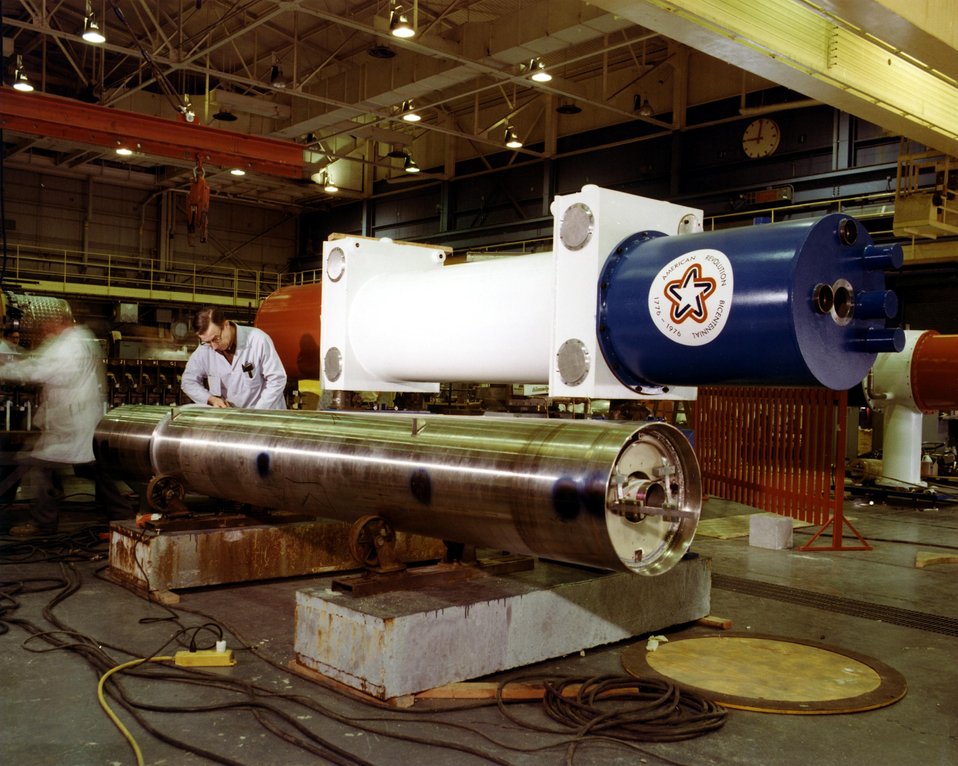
MAGNET IS READY FOR INSERTION IN THE CRYOSTAT SEEN IN THE BACKGROUND. CBA IS A PROTON-PROTON COLLIDING BEAM ACCELERATOR WHICH IS BEING BUILT TO STUDY THE BASIC STRUCTURE OF ENERGY AND MATTER. THE FACILITY ITSELF IS AN UNDERGROUND CIRCULAR TUNNEL, WHICH IS 3.8 KILOMETERS IN CIRCUMFERENCE. TWO RINGS OF SUPERCONDUCTING MAGNETS WILL BE INSIDE THE TUNNEL. PROTON BEAMS WILL BE INJECTED INTO THE TUNNEL AND ACCELERATED TO ENERGIES UP TO 400 GEV. AT SIX PLACES ALONG THE TUNNEL, THE BEAMS WILL COLLIDE. EXPERIMENTAL HALLS, WHICH ENCLOSE THESE SIX INTERSECTIONS, WILL HOUSE EQUIPMENT FOR STUDYING THE RESULTS OF THE COLLISIONS.